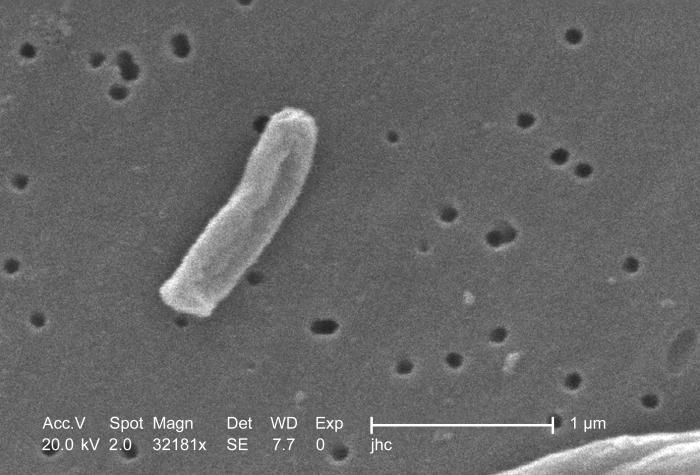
Under a very high magnification of 32181x, this scanning electron micrograph (SEM) depicted some of the ultrastructural details seen in the cell wall configuration of a Gram-positive Mycobacterium tuberculosis bacterium. As an obligate aerobic organism M. tuberculosis can only survive in an environment containing oxygen. This bacterium ranges in length between 2 - 4�m, and a width between 0.2 - 0.5�m.